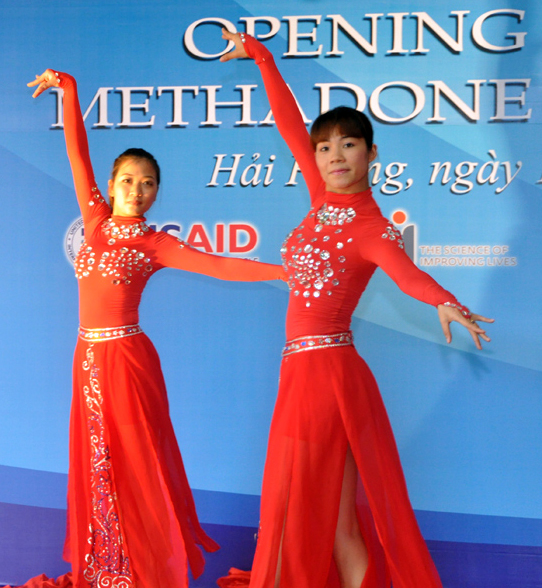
Co-pay Methadone Treatment Center Opens in Hai Phong on June 18, 2011